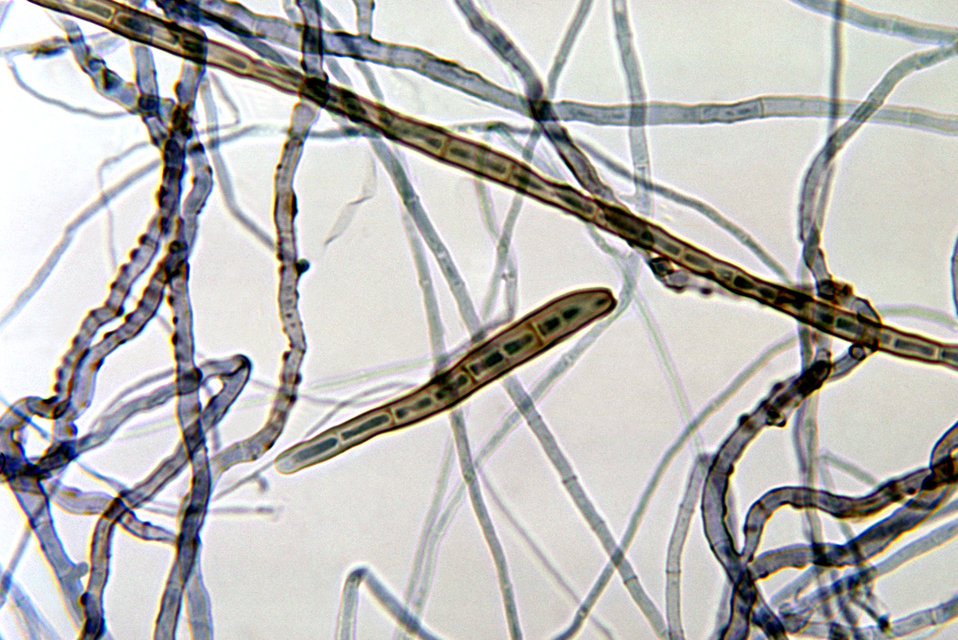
This photomicrograph depicts the mould Corynespora cassiicola of the group Fungi Imperfecti, taken from a slide culture.